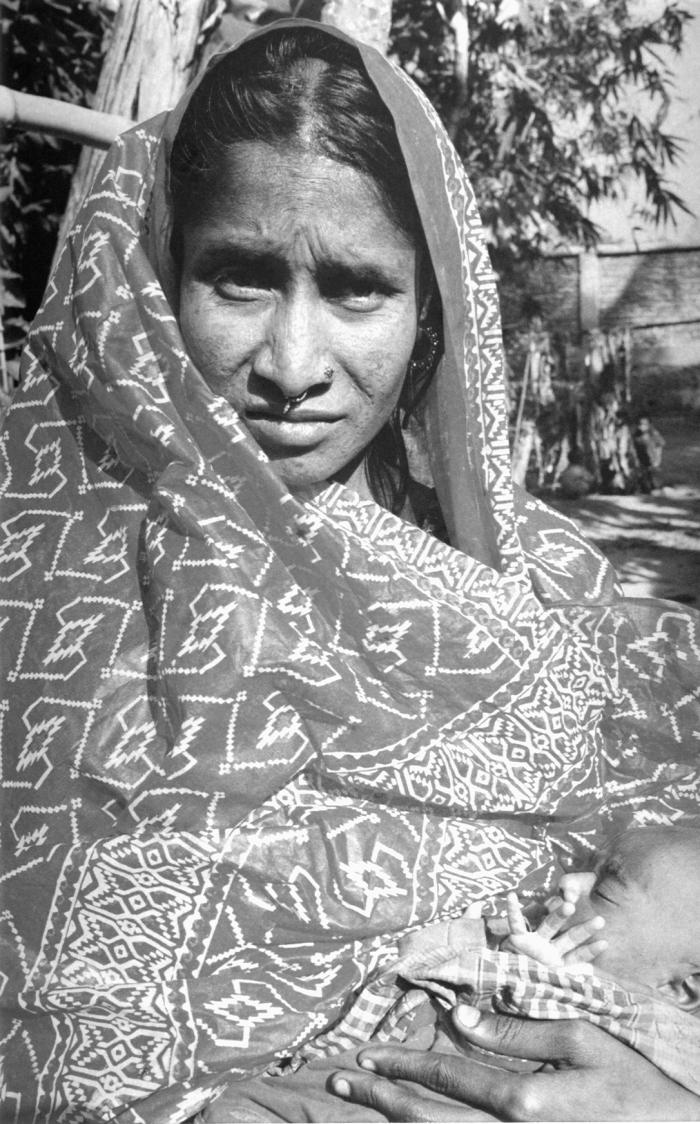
This photograph was captured in 2000, and what makes it so intriguing is that the Bangladesh woman holding her child is Rahima Banu, who 25 years previously, at the age of 2 years, was recorded as the last known, naturally-occurring case of smallpox, i.e., variola major, in the world.